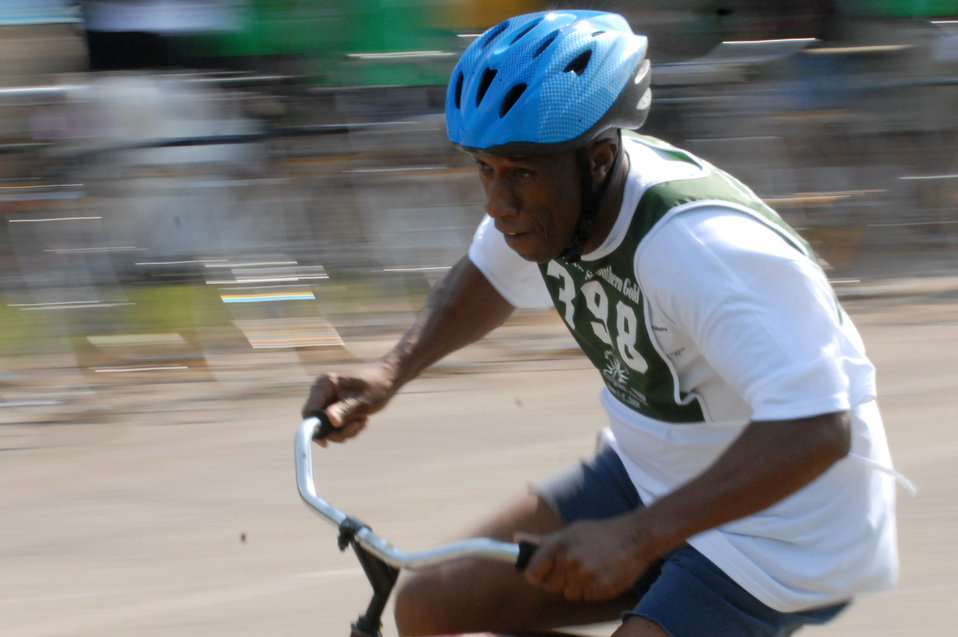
VA National Veterans Golden Age Games

Jonah Hicks, a 64-year-old Marine Corps and Vietnam War veteran, speeds around the track June 2 in Birmingham, Ala., during the cycling event at the 23rd Annual National Veterans Golden Age Games.